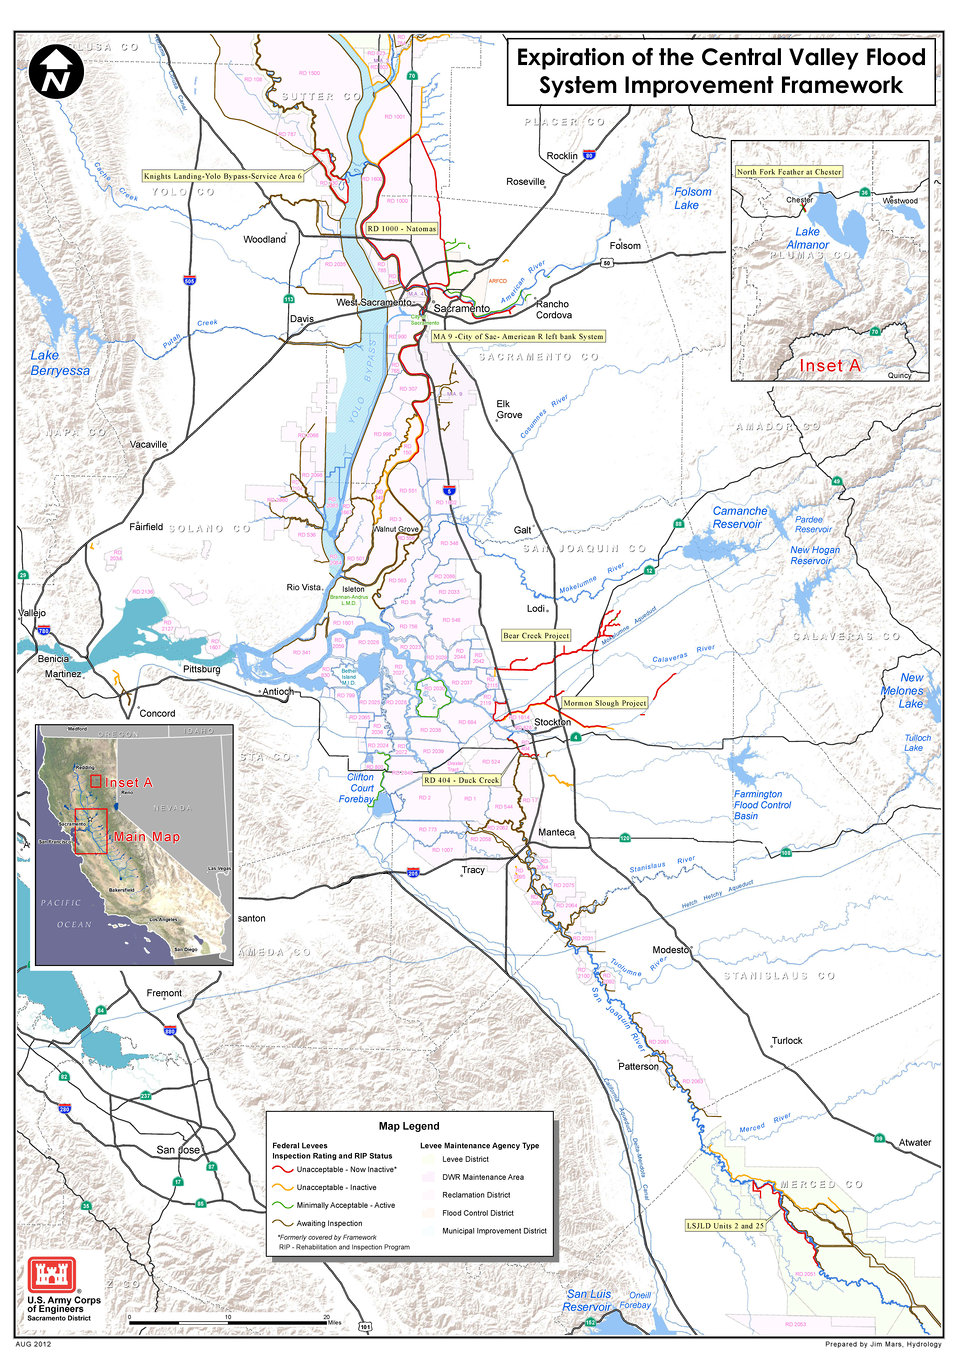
Central Valley levee systems inspection status

U.S. Army Corps of Engineers levee system inspection ratings in California's Central Valley, as of Aug. 22, 2012. With the expiration of the California Central Valley Flood System Improvement Framework in June 2012, 17 levee systems that received unacceptable inspection ratings for deficiencies covered by the framework became inactive in the the Corps' levee Rehabilitation and Inspection Program. Inactive systems are ineligible for federal levee rehabilitation assistance after a flood or storm, though the Corps will always help levee managers flood fight in an emergency. For more on Corps levee inspections in the Central Valley, visit the Sacramento District's levee safety website: www.spk.usace.army.mil/Missions/CivilWorks/LeveeSafetyPro... For a high-resolution PDF version of this map, please contact the Sacramento District's public affairs office at spk-pao@usace.army.mil.